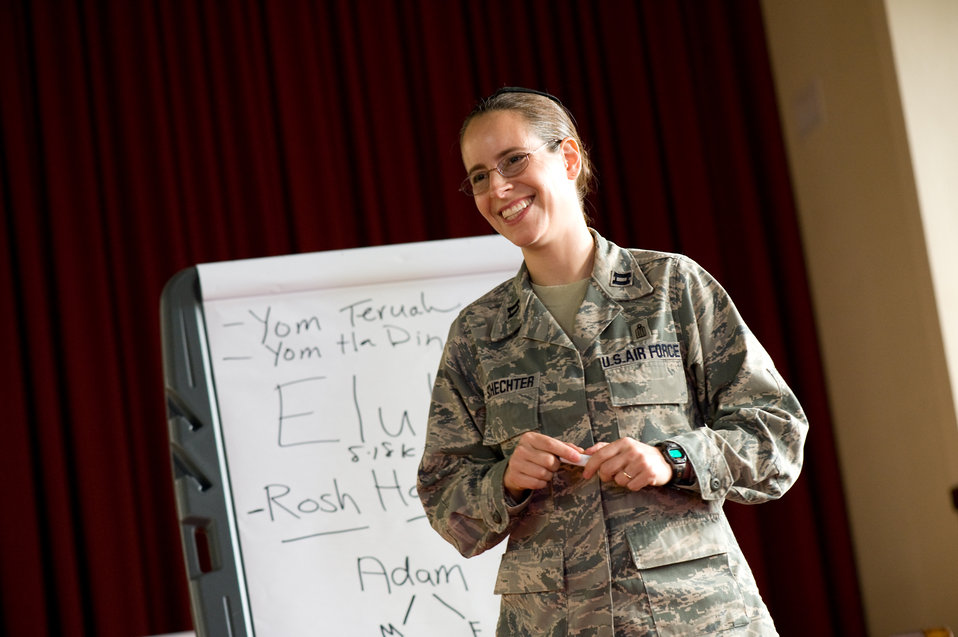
U.S. Air Force Chaplaincy

U.S. Air Force Rabbi, Chaplain, Captain Sarah D. Schechter leads the evening le'il shabbat service on Friday, Sept. 4, 2009 at Lackland Air Force Base's Airmen Memorial Chapel. The more than 25 basic military trainees and other attendees participated in a religious education class that taught them how to prepare for the Jewish New Year, Rosh Hashanah. This was followed by the Ma'ariv prayer service for the setting of the sun, and then a meal provided by lay leaders supporting the service. Because of training schedules some ceremonies and events are earlier than traditionally held. By order of commanders, those who want to attend any or all religious services of their choosing are given full permission and opportunity to do so. Chaplain, Captain Schechter is an Operation Iraqi Freedom veteran and considers her deployment there to be one of the highlights of her career. Schechter is the first woman rabbi in the U.S. Air Force.